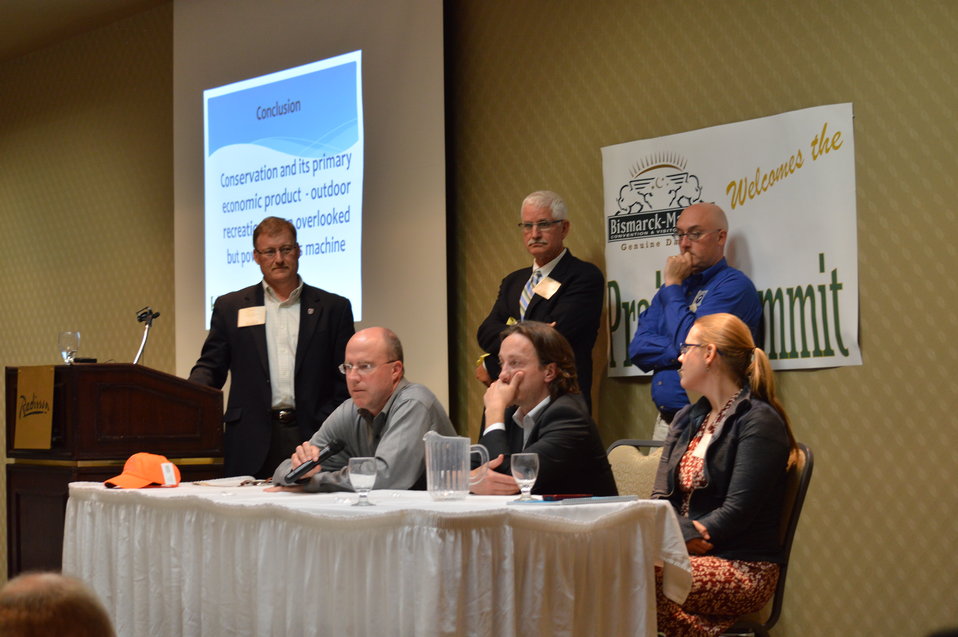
Group Panel at the Prairie Summit

Through the efforts of Ducks Unlimited and its partners, a Prairie Summit meeting was held in June 2013 in Bismarck, North Dakota, bringing key stakeholders to the table to identify and begin to address the immediate needs of the overall effort to conserve wetlands and grasslands, as well as bring media attention to the issues at hand and the urgency of the situation.